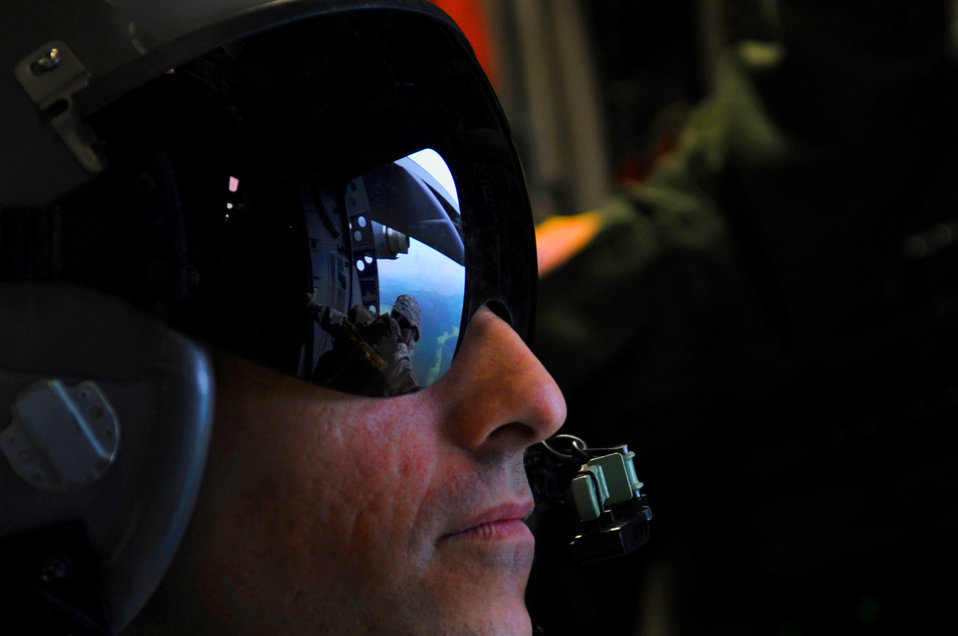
Ramstein Airmen participate in NATO jump

Master Sgt. Jason Brown watches a jumpmaster perform his checks before executing an airborne jump over the drop zone in Alzey, Germany, June 14, 2010. Five NATO countries participated in the annual event to support one of U. S. Air Forces in Europe's top priorities, building partnerships. Sergeant Brown is a loadmaster with the Heavy Airlift Squadron at Papa Air Base, Hungary.